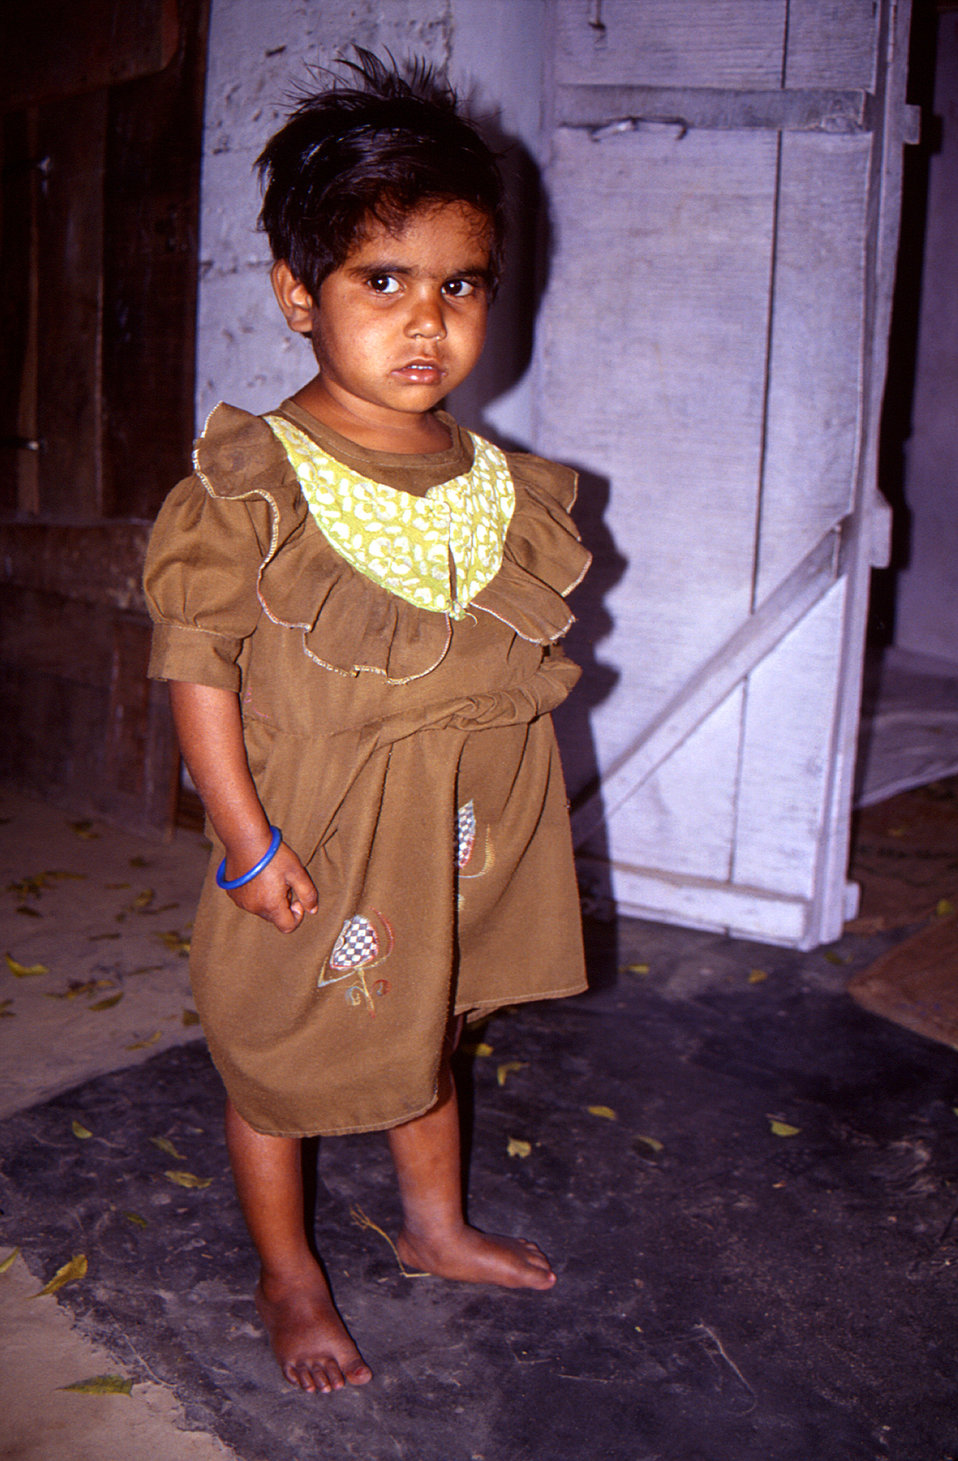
This was a young Indian child who was reported to be suffering with acute flaccid paralysis (AFP), however, a follow up visit made by a health care practitioner, in order to interview her parents, and examine the child, could not confirm the diagnosis of polio. This 2000 photograph was provided by Chris Zahniser, B.S.N., R.N., M.P.H., a STOP Transmission of Polio (STOP) immunization initiative team member and photographer. Ms. Zahniser was at the time assigned to the state of Uttar Pradesh in northern India, and spent three months working in the Districts of Gorakhpur and Deoria.